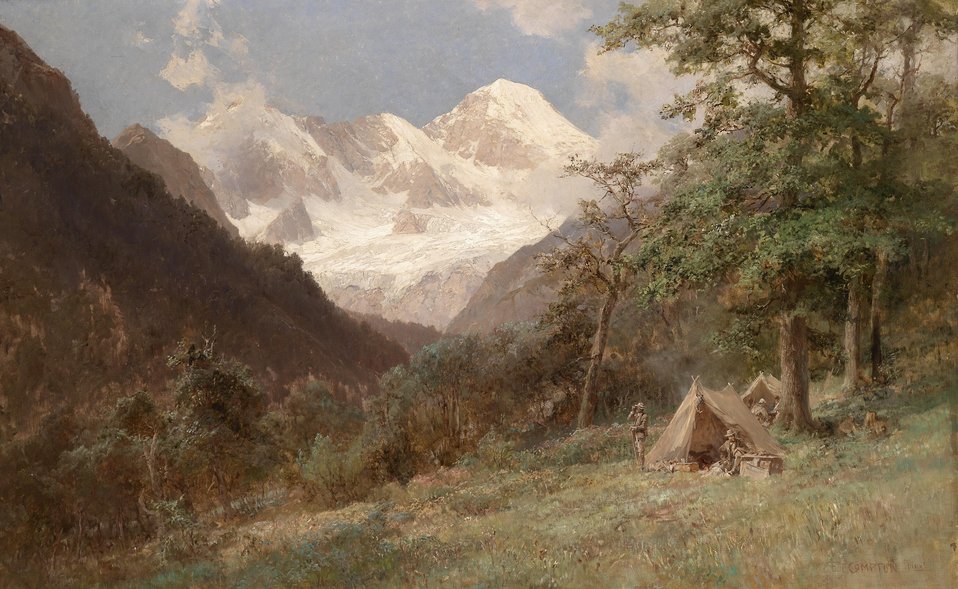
Deutsch: Blick auf eine Bergkette im Kaukasus mit Zeltlager von Forschungsreisenden, signiert E. T. Compton pinxit, Öl auf Leinwand, 100 x 160 cm